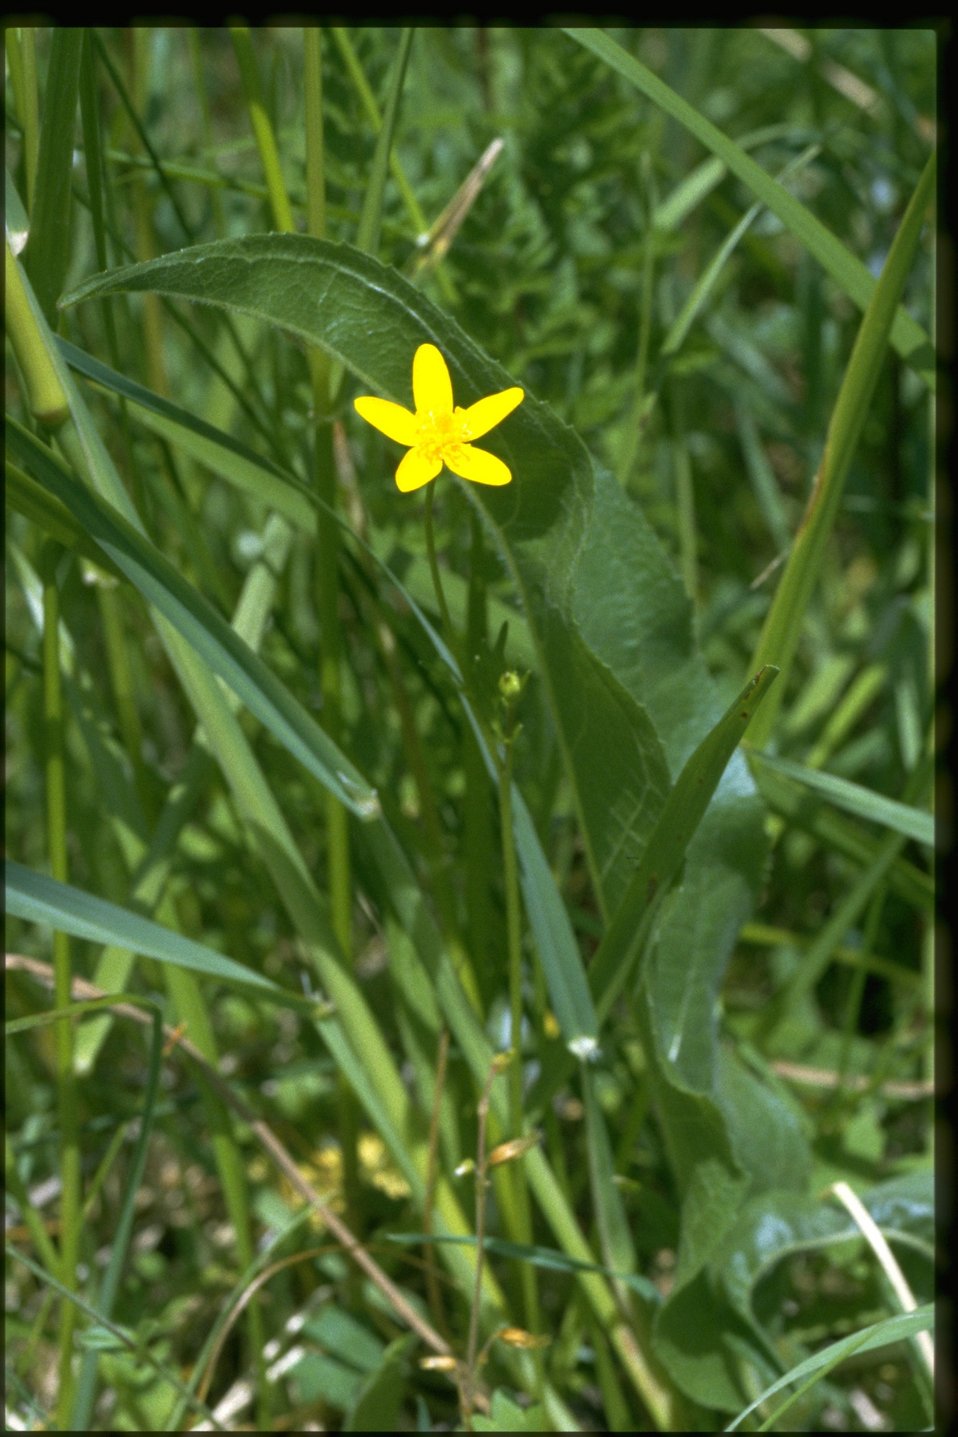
Farshot of Ranunculus.